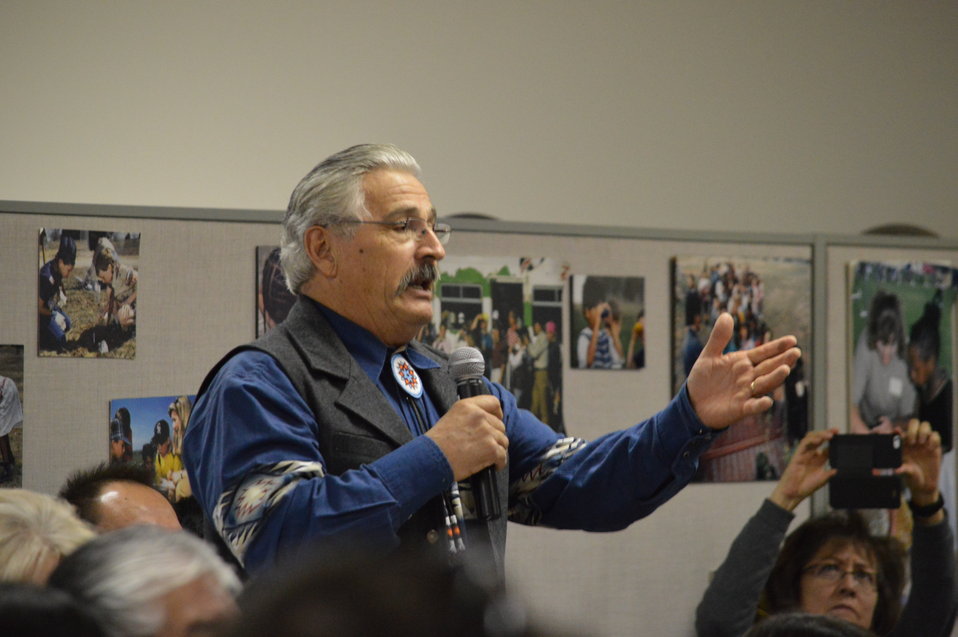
Eagle Summit III

Questions and comments are raised at the Eagle Summit III in Denver, Colorado on March 20, 2014 at the Rocky Mountain Arsenal National Wildlife Refuge.